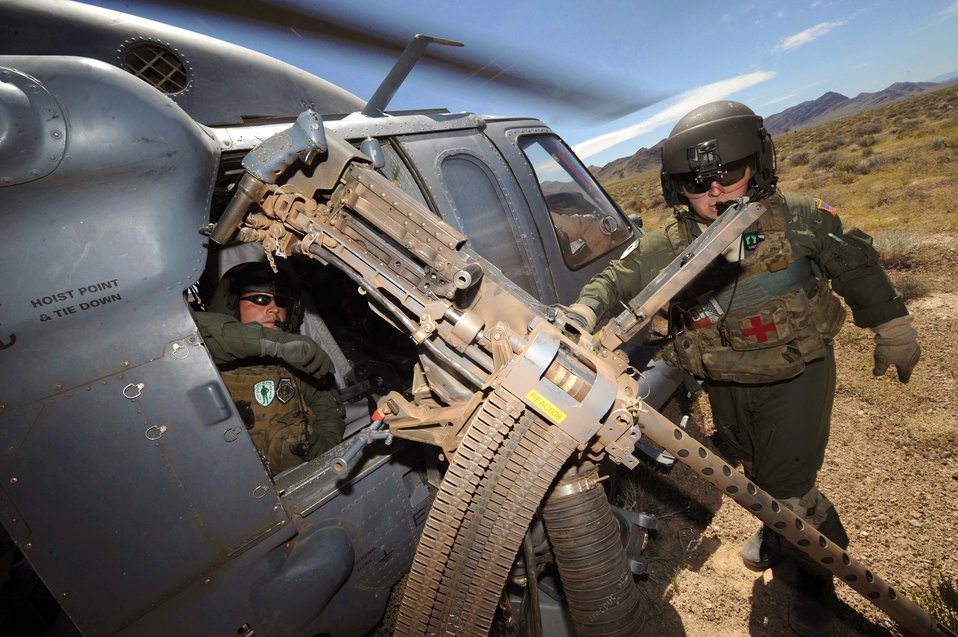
California Guard participates in firing mission

Tech. Sgt. Michael Vincent (left) and Staff Sgt. Andrew Gibson prepare to reload .50- caliber machine gun on a an HH-60 Pave Hawk during a fixed forward firing mission June 25, 2010, on the Nevada Test and Training Range. Sergeant Vincent is a flight engineer from the U.S. Air Force Weapons School at Nellis Air Force Base, Nev., and Sergeant Gibson is also a flight engineer assigned to the California Air National Guard's 129th Rescue Squadron at Moffett Field, Calif.